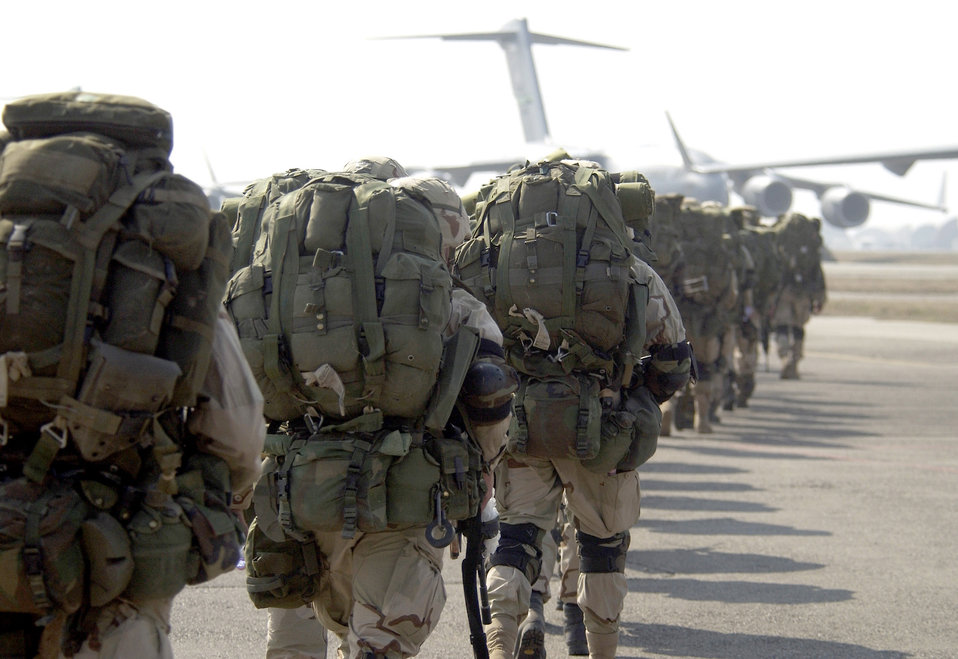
Army, Air Force troops move out

OPERATION IRAQI FREEDOM -- U.S. Army paratroopers and U.S. Air Force tactical air controllers move to a marshalling area behind a U.S. Air Force C-17 Globemaster III on March 26 and prepare to move forward from an air base in Europe to participate in Operation Iraqi Freedom.